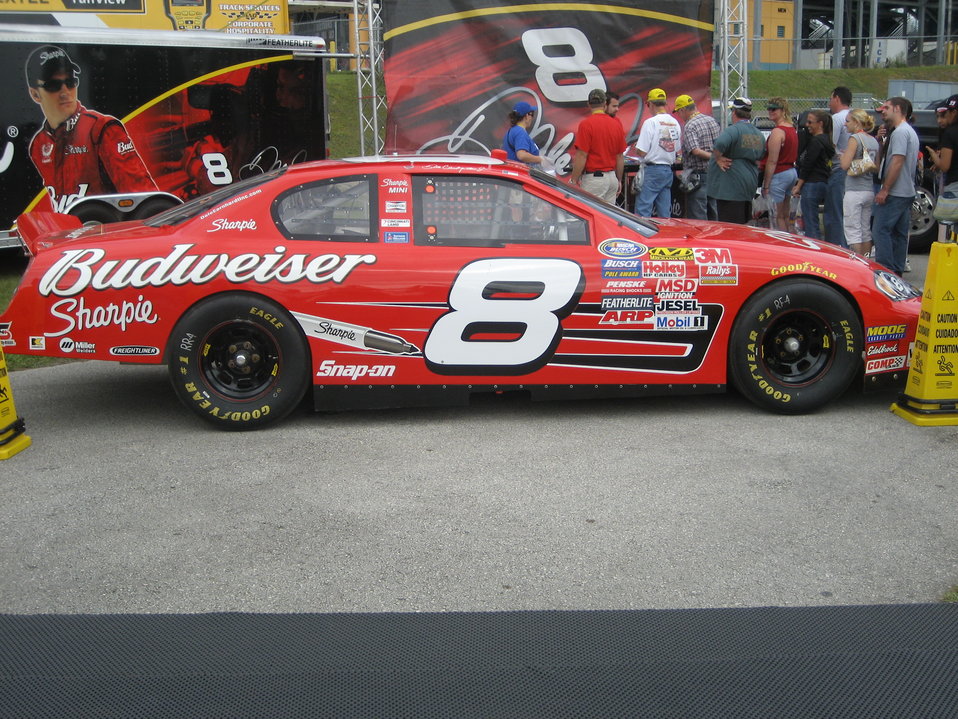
Jr.'s #8 Sharpie Busch car at the Sharpie display at the 2007 Ford Championship Weekend at the Homestead-Miami Speedway.